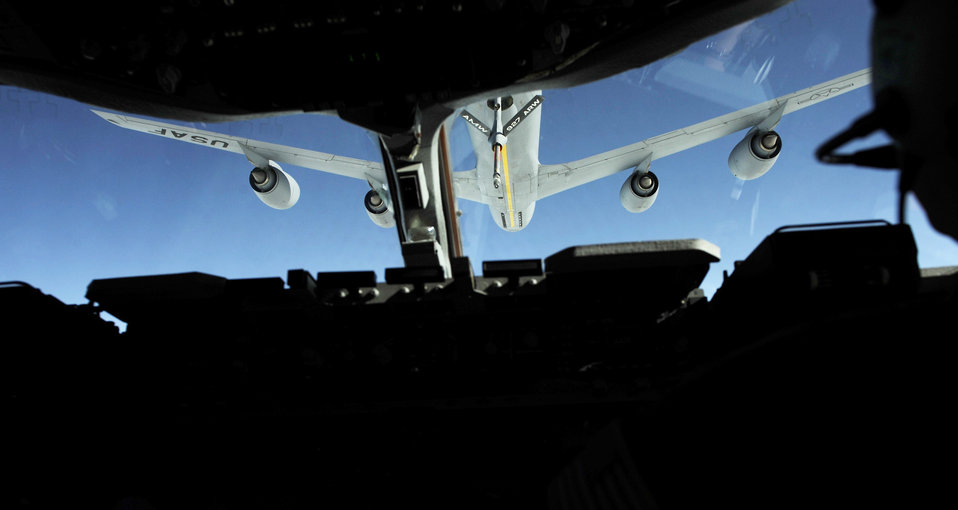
Getting into position

Lt. Col. Brian Loehrke maneuvers his C-17 Globemaster III into position under a KC-135 Stratotanker from MacDill Air Force Base, Fla., March 12, 2010, during an air refueling operation. Colonel Loehrke is from the 300th Airlift Squadron at Charleston AFB, S.C.